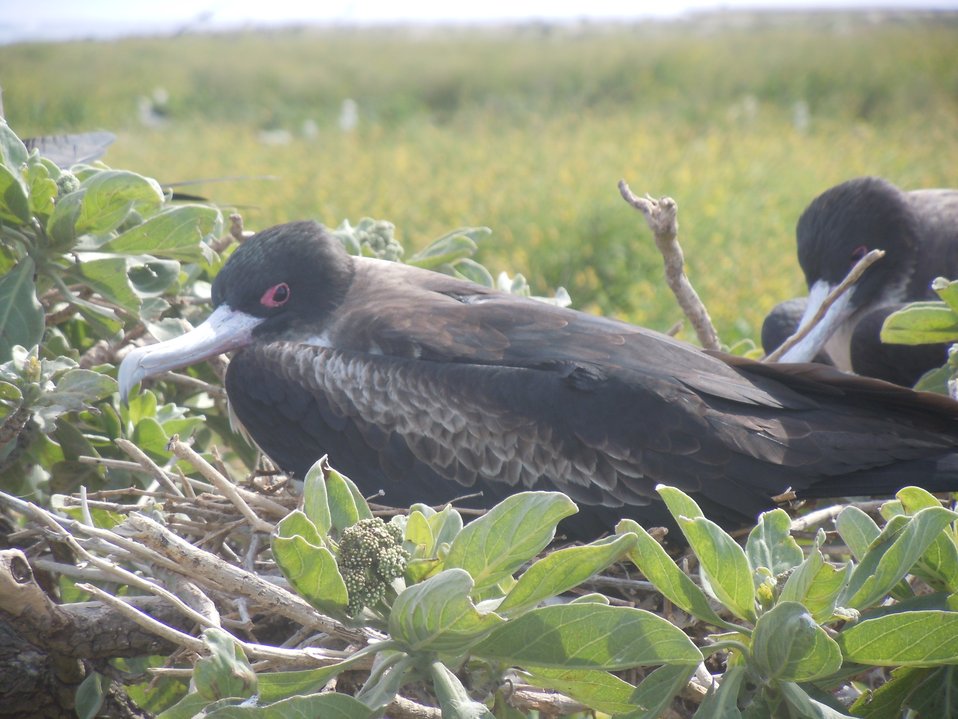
great frigate birds

Midway Atoll National Wildlife Refuge
March 2012